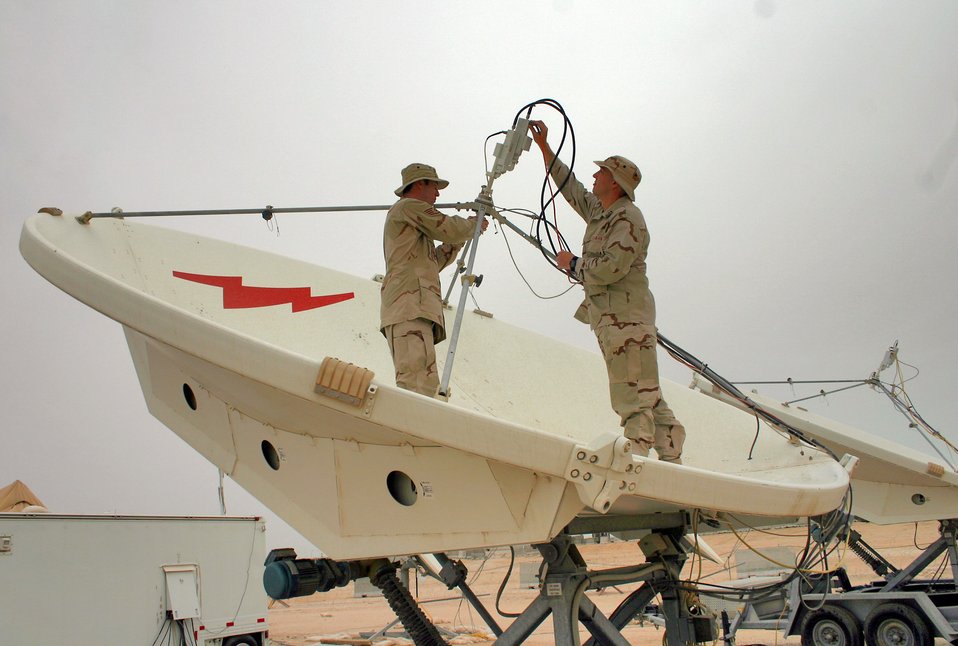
Antenna check

Staff Sgt. Neil Holdren and Capt. Kevin Mahar accomplish a periodic maintenance inspection on an antenna feed. The space technicians are deployed to the 379th Air Expeditionary Wing.